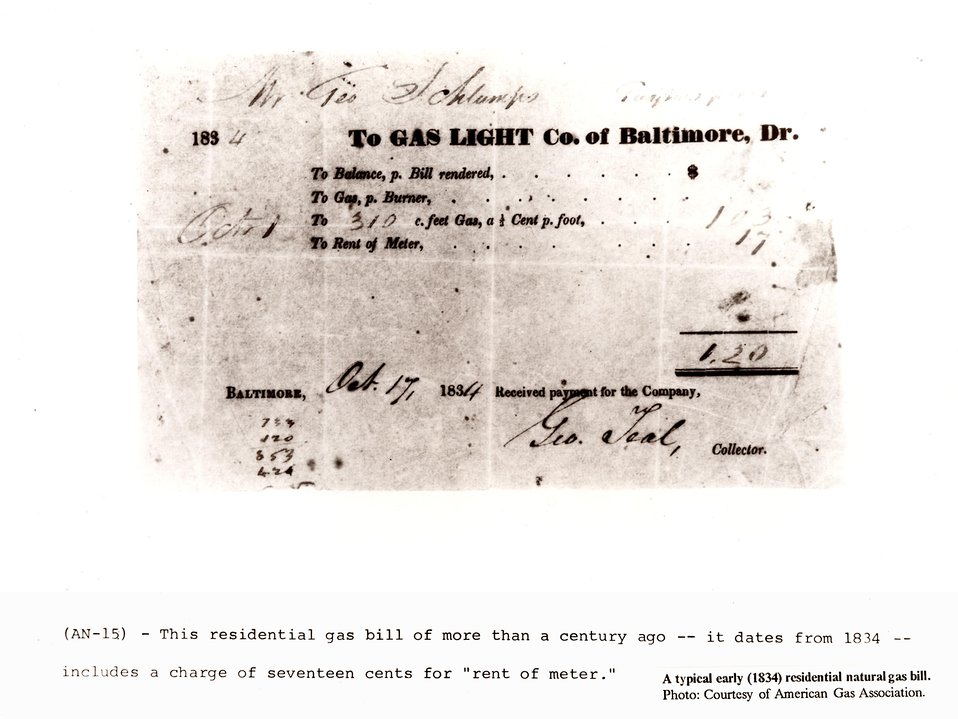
A typical early residential natural gas bill, 1834.